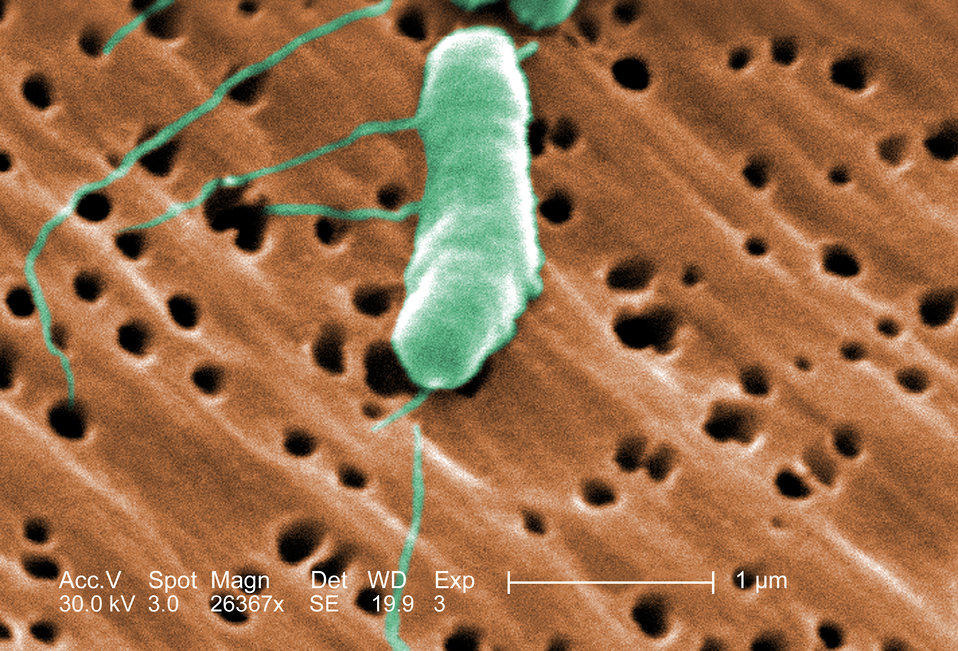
This colorized scanning electron micrograph (SEM) depicted a flagellated Vibrio vulnificus bacterium; Mag. 26367x.